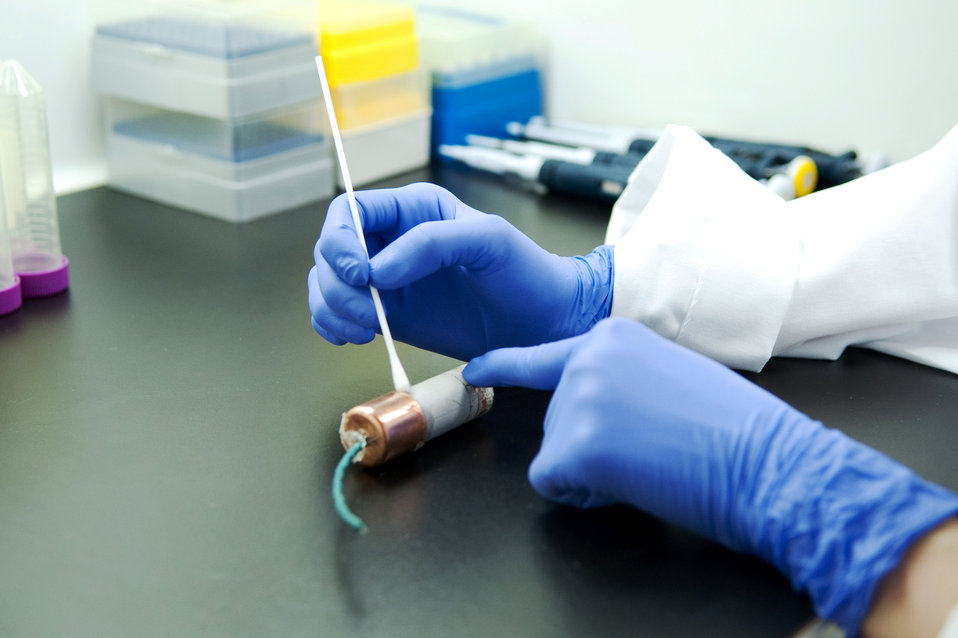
Collecting Biological Material from Pipe Bomb

A forensic technician collects biological material from a pipe bomb. A new handbook from NIST and the National Institute of Justice provides state-of-the-art guidelines and best practices for storing, preserving and tracking biological evidence such as this.